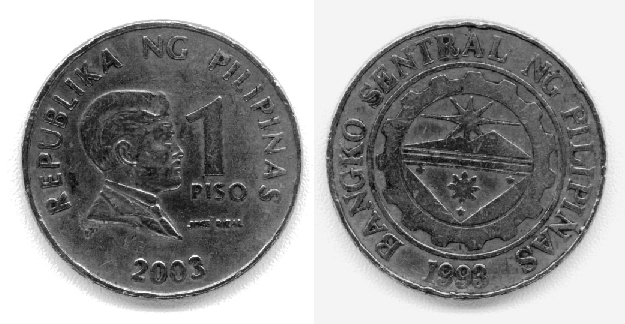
Deutsch: 1 Peso-Münze von 2003